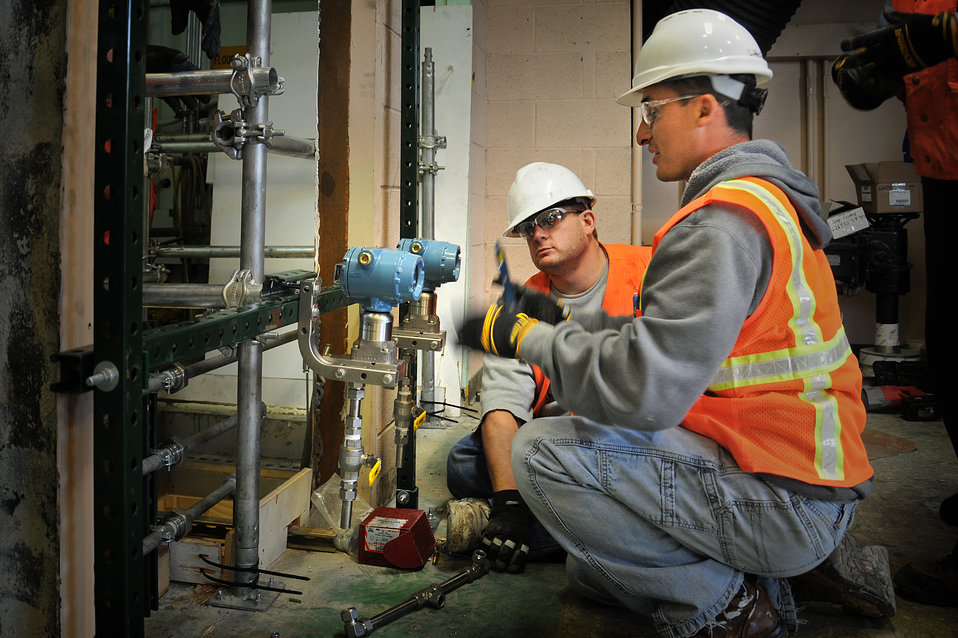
Recovery Act work

Decontamination and Demolition (D&D) workers are checking instrumentation that will be used for sodium treatment as part of an effort to demolish the Experimental Breeder Reactor-II at the Materials and Fuels Complex of the Idaho National Laboratory. This project is being funded through ARRA.